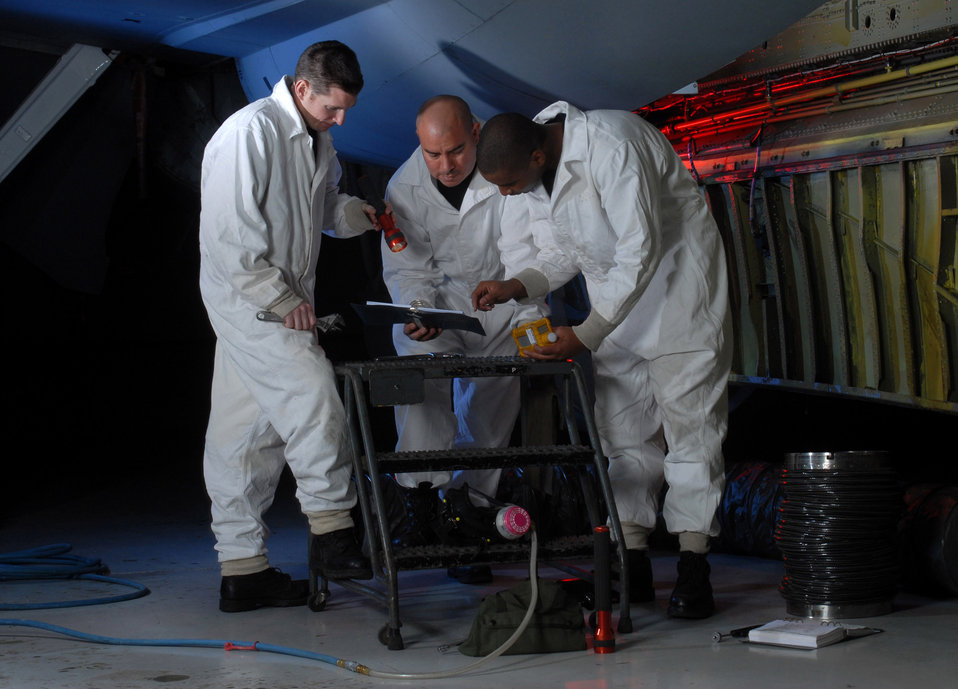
By the book

Staff Sgt. Ryan Slanina (from left), Tech. Sgt. Tim Burrola and Senior Airman David Skannal reference their technical order before inspecting a fuel tank of a KC-135 Stratotanker Jan. 9 at March Air Reserve Base, Calif. The three are all fuel cell technicians from the 452nd Maintenance Squadron.